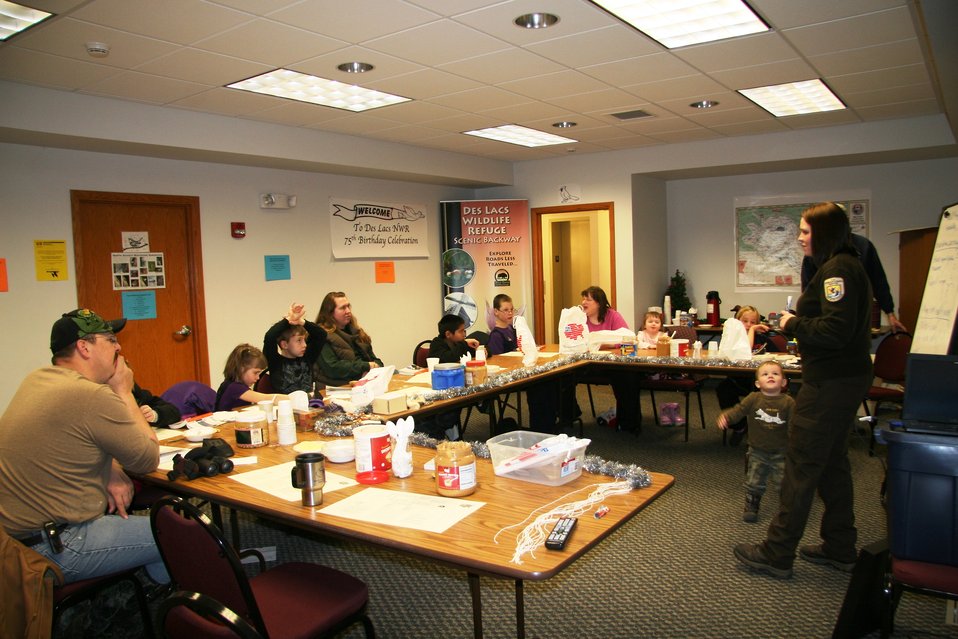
Young Citizen Scientists

The group also learned how they just became young 'citizen scientists.'